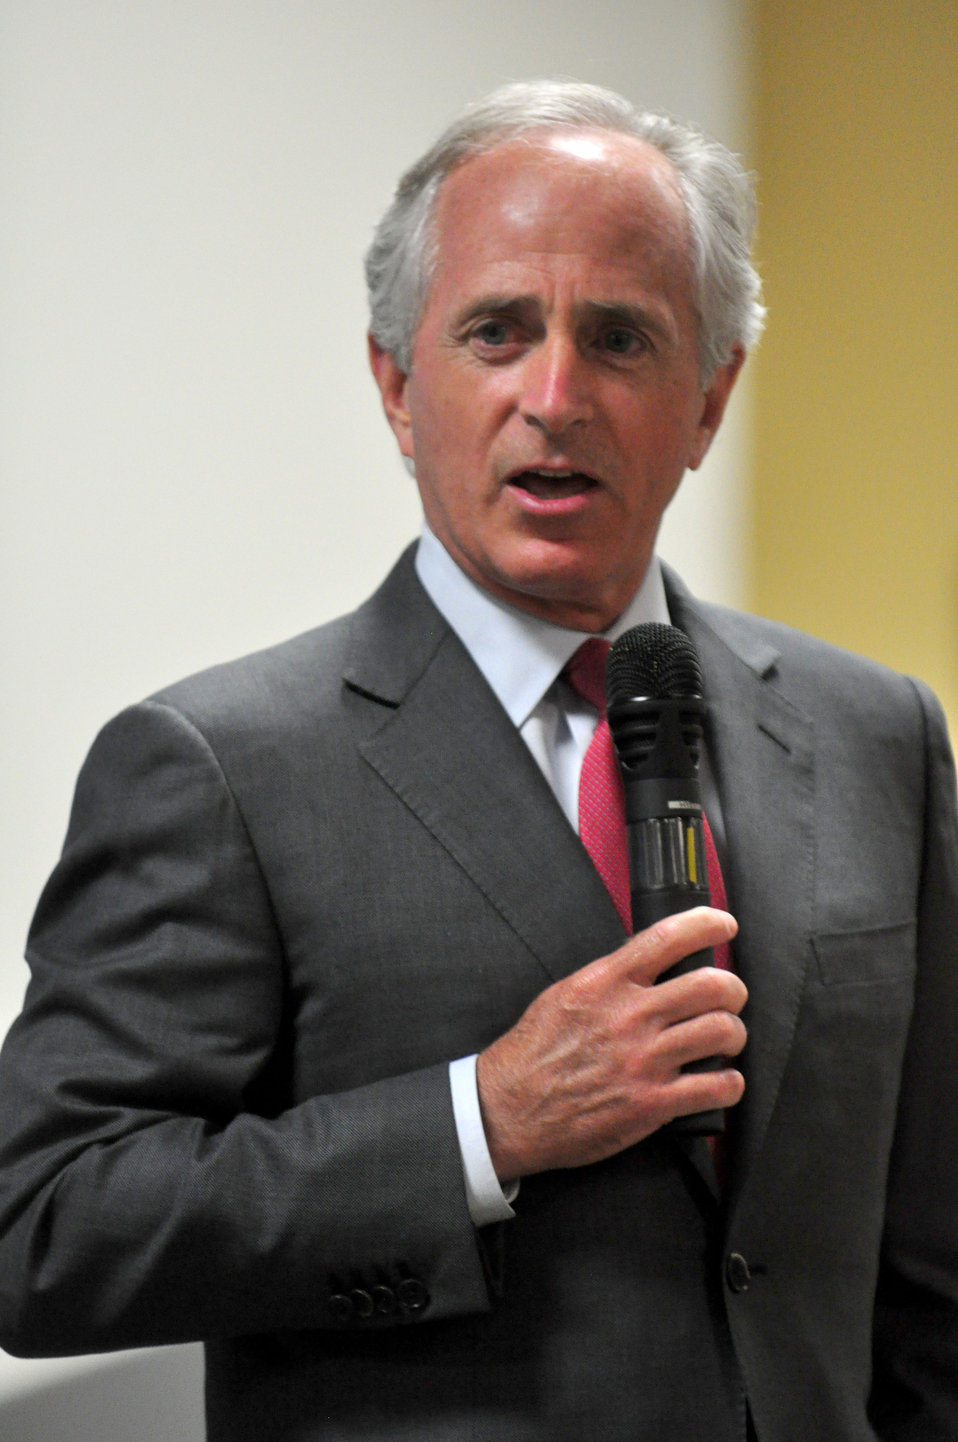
U.S. Senator Bob Corker Tennessee Valley Corridor Summit Oak Ridge

13-062 DOE photo Lynn Freeny 5-29-2013 Oak Ridge Tennessee